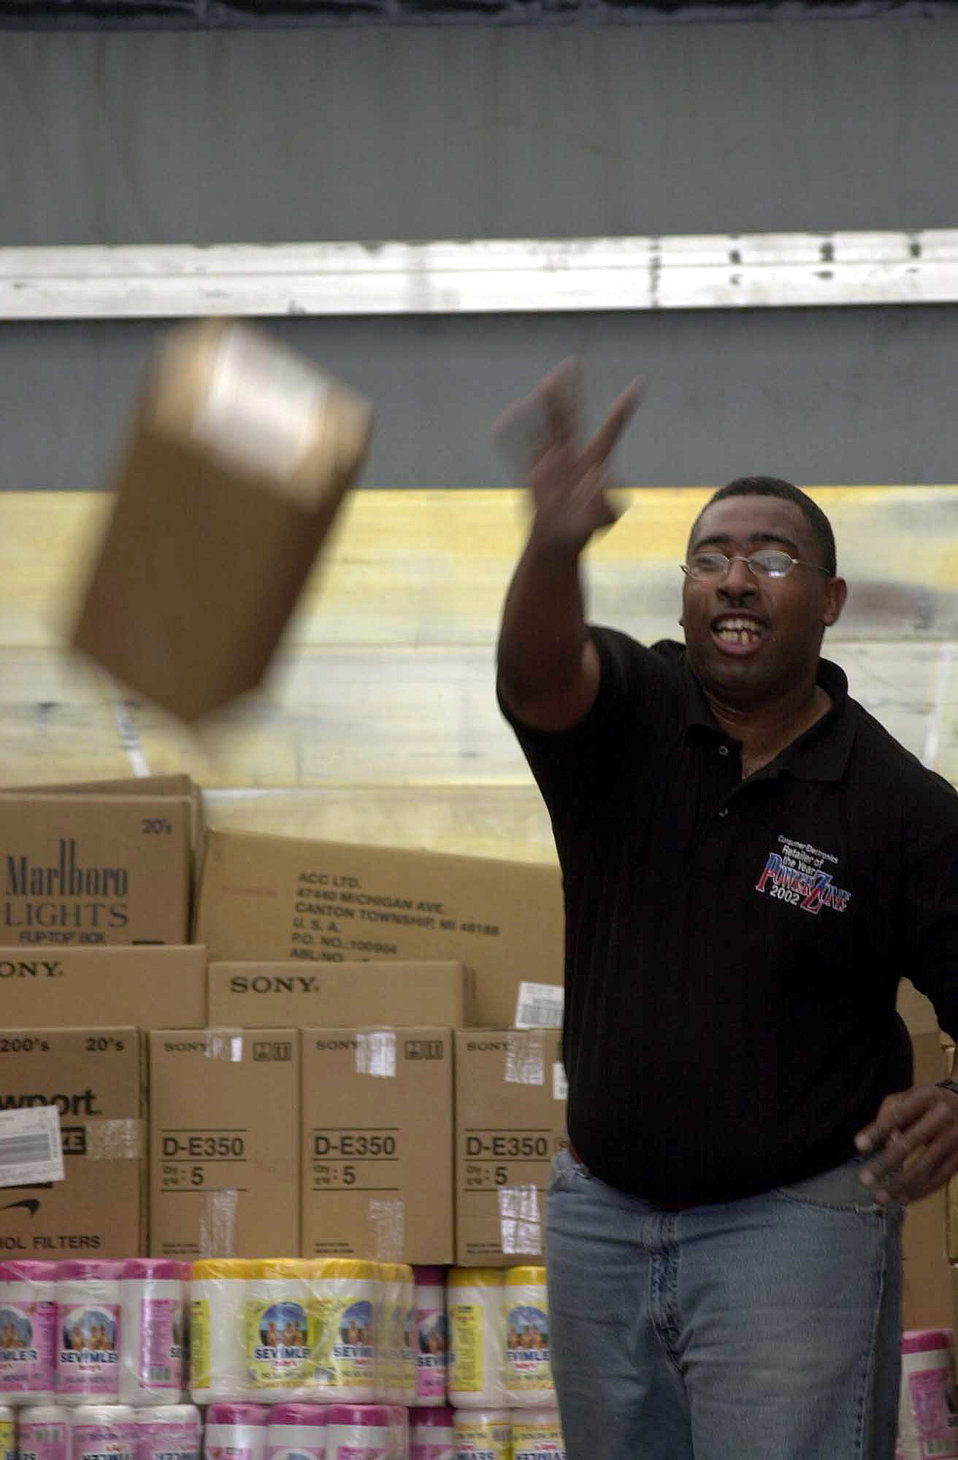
Catch

OPERATION ENDURING FREEDOM -- Walter Lee Jesse Sr., a stock manager from Camp Bonsteel, Kosovo, unloads boxes from a delivery truck to prepare for the grand opening of the Base/Post Exchange here at Mihail Kogalniceanu Air Base, Romania, in support of Operation Enduring Freedom April 2, 2003. The 458th Air Expeditionary Group is currently maintaining an airbridge at the base to transport supplies and people to the Central Command Area of Responsibility.